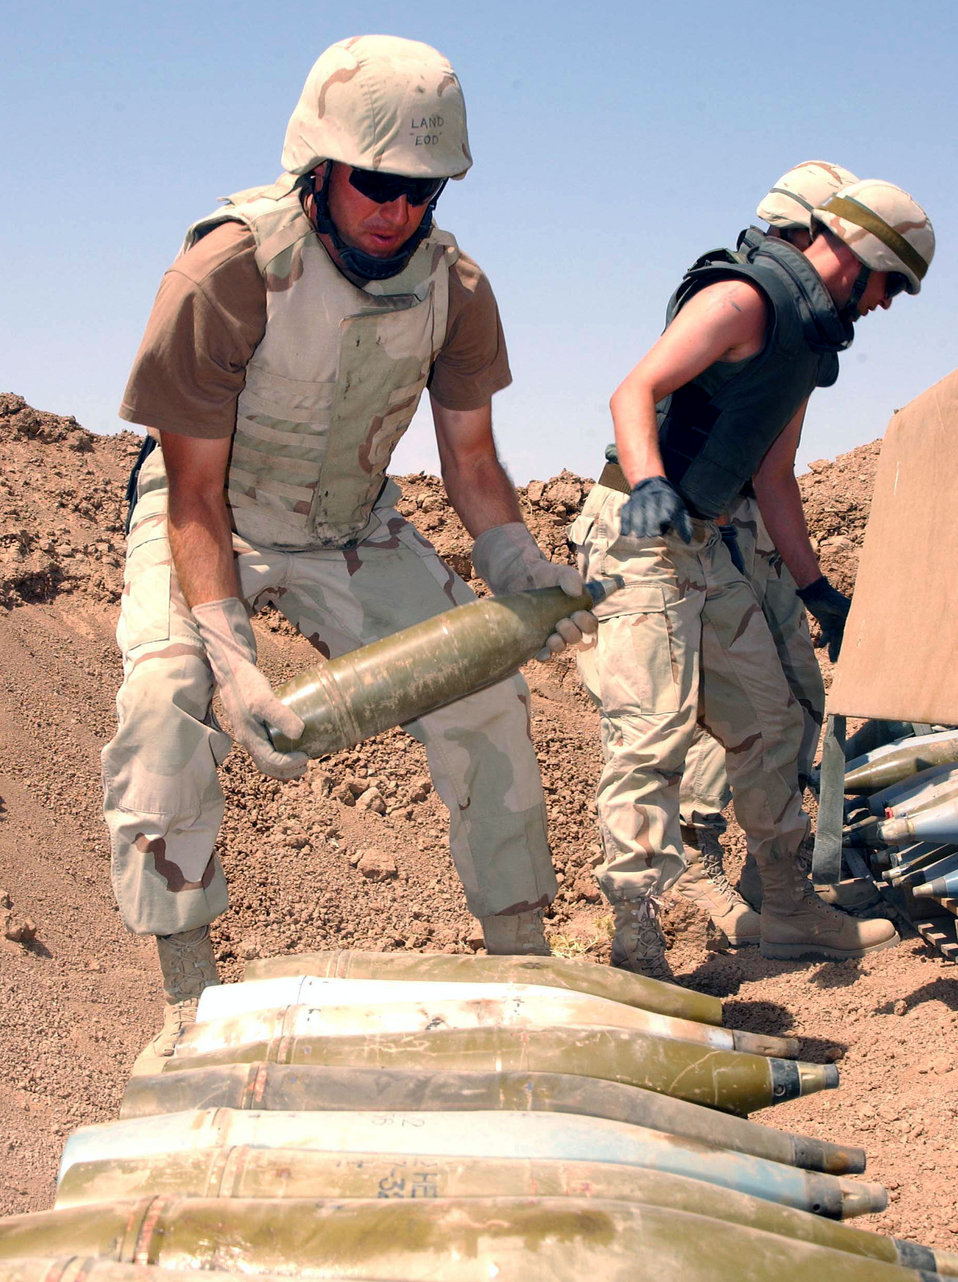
Bomb disposer

KIRKUK AIR BASE , Iraq -- Tech. Sgt. Michael Land with the 506th Expeditionary Civil Engineer Squadron stacks munitions for disposal June 15.